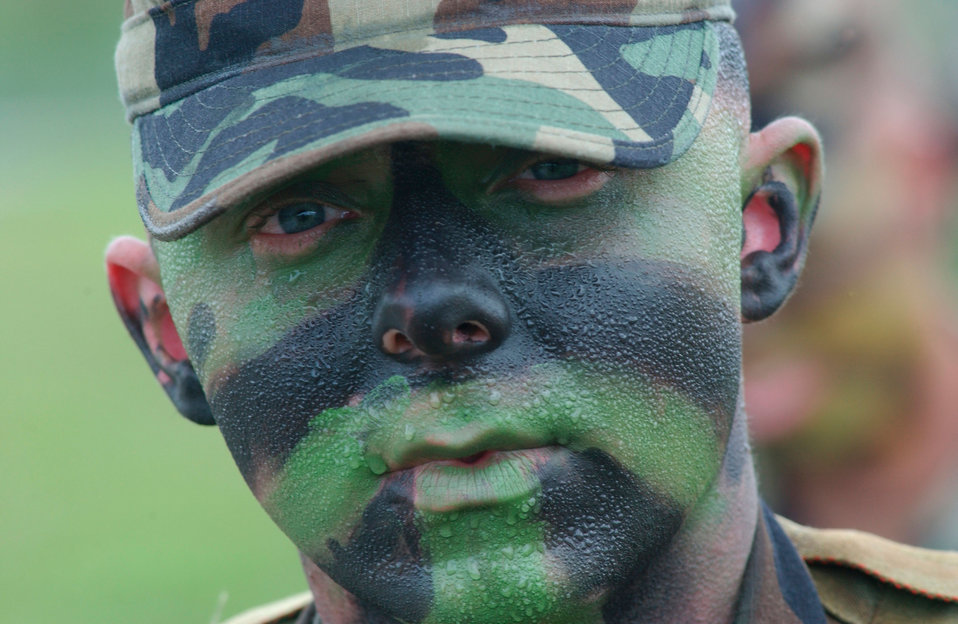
Waiting for my ride

ANDERSEN AIR FORCE BASE, Guam -- Army Pfc. Joshua McComas sweats in the heat and humidity as he waits for the arrival of helicopters to take him to Tinian Island as part of an airborne insertion, April 26. The insertion is part of Tandem Thrust '03, a joint exercise conducted in the Mariana Islands. The exercise includes forces from the United States, Canada, and Austalia.